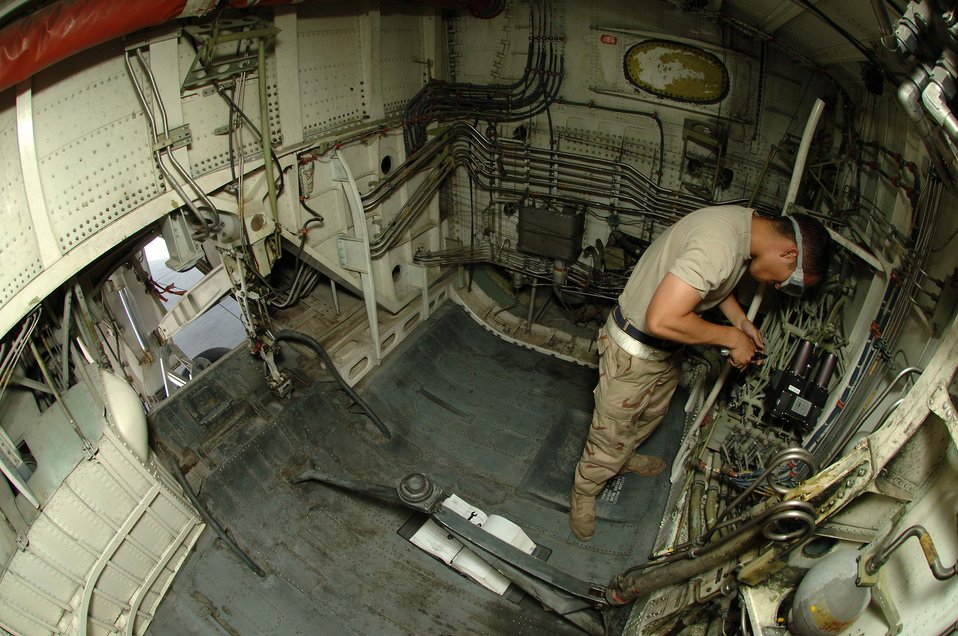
One more wire

Senior Airman Jay Barros performs maintenance on a KC-10 Extender March 27 at a base in Southwest Asia. Providing 6.5 million pounds of jet fuel weekly, the KC-10 gives global reach to U.S. and coalition aircraft. Airman Barros is with the 380th Expeditionary Aircraft Maintenance Squadron.